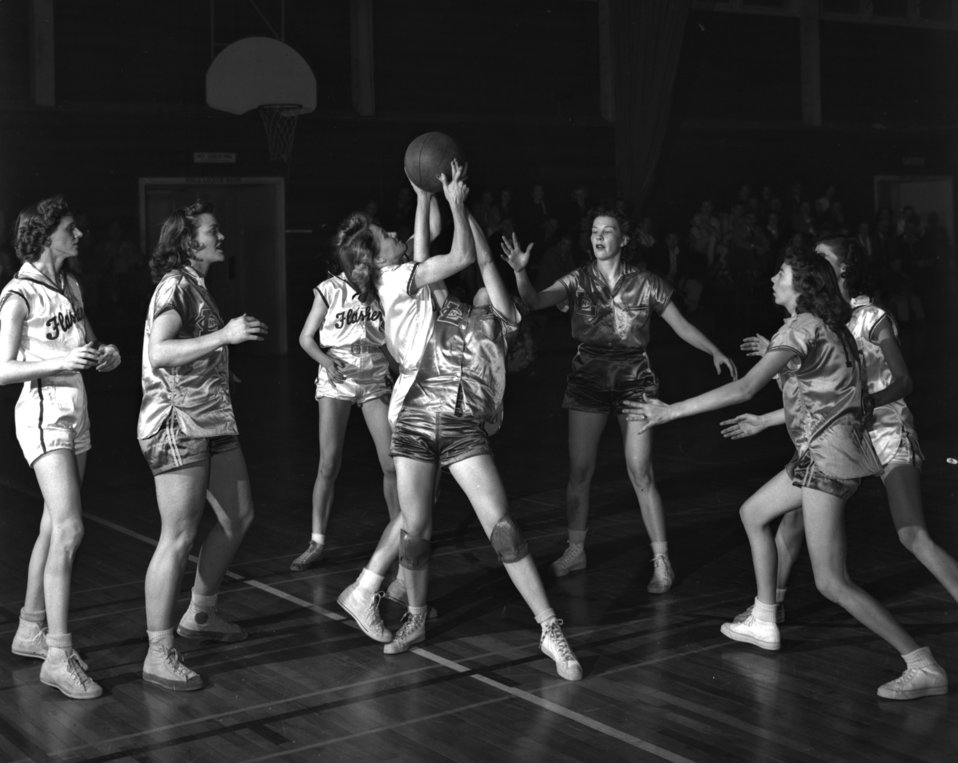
Women's Basketball Monsanto Vs. Maryville

4221d Oak Ridge Tennessee 1-3-1948 DOE photo by Ed Westcott